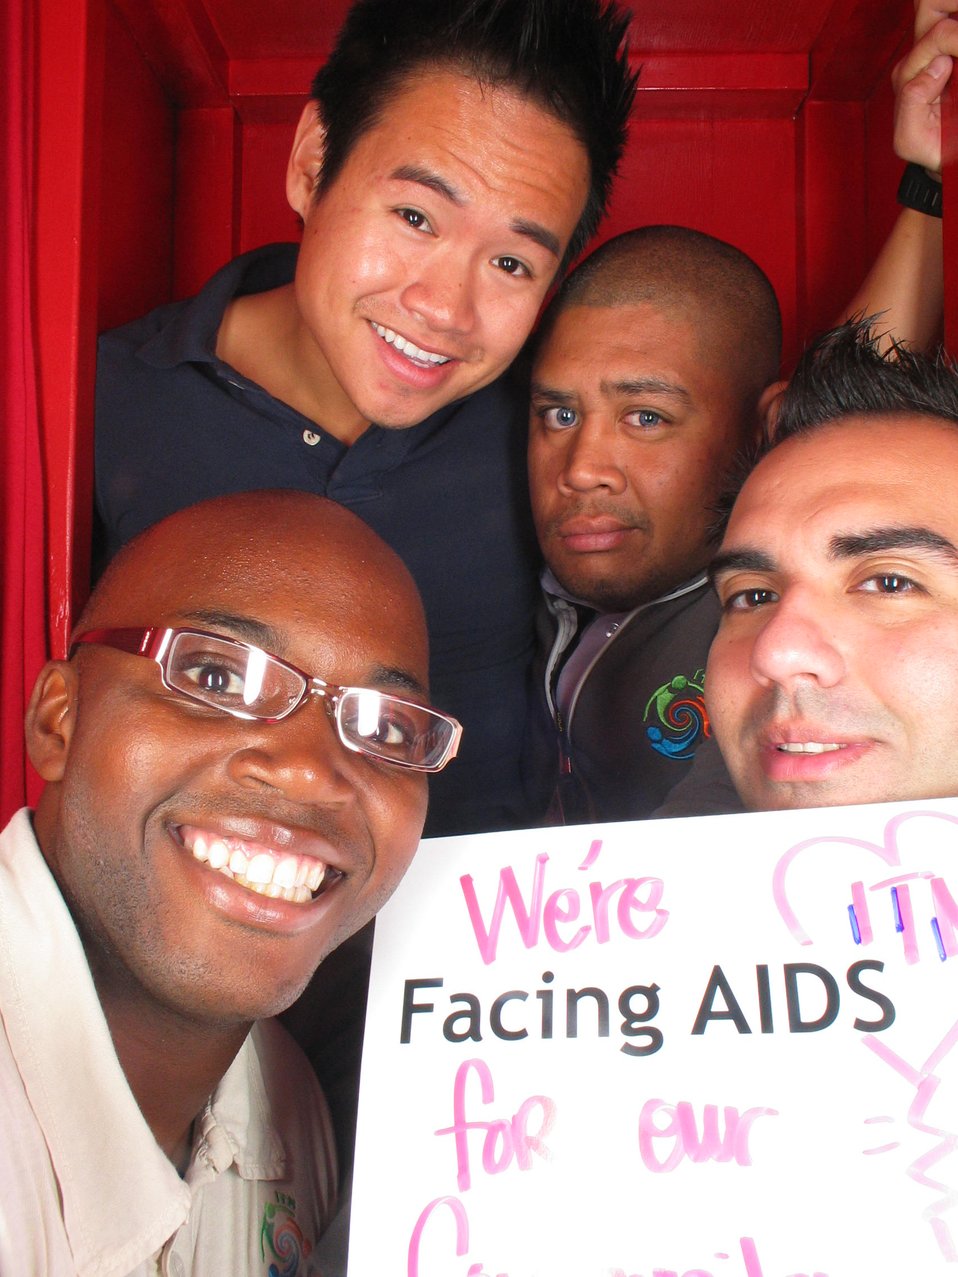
We're Facing AIDS